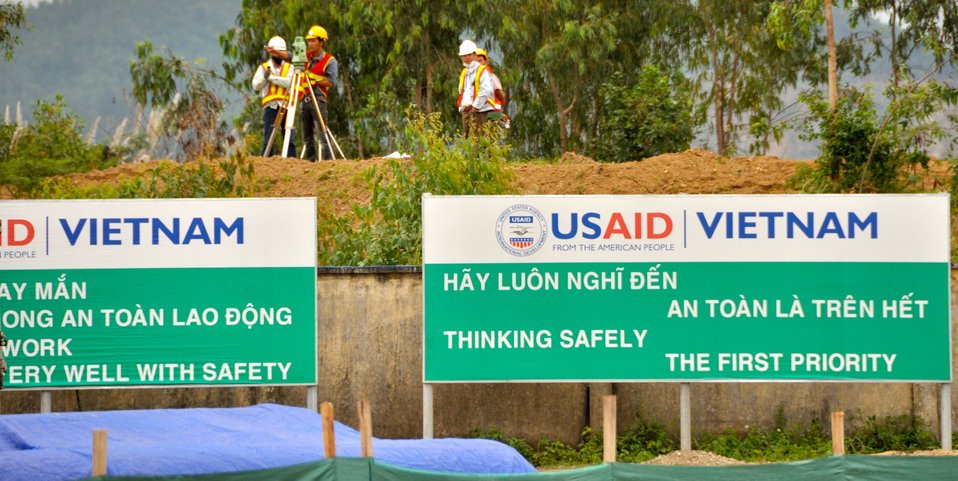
Site Preparation for Environmental Remediation of Dioxin Contamination at Danang Airport

Danang Airport, January 22, 2013